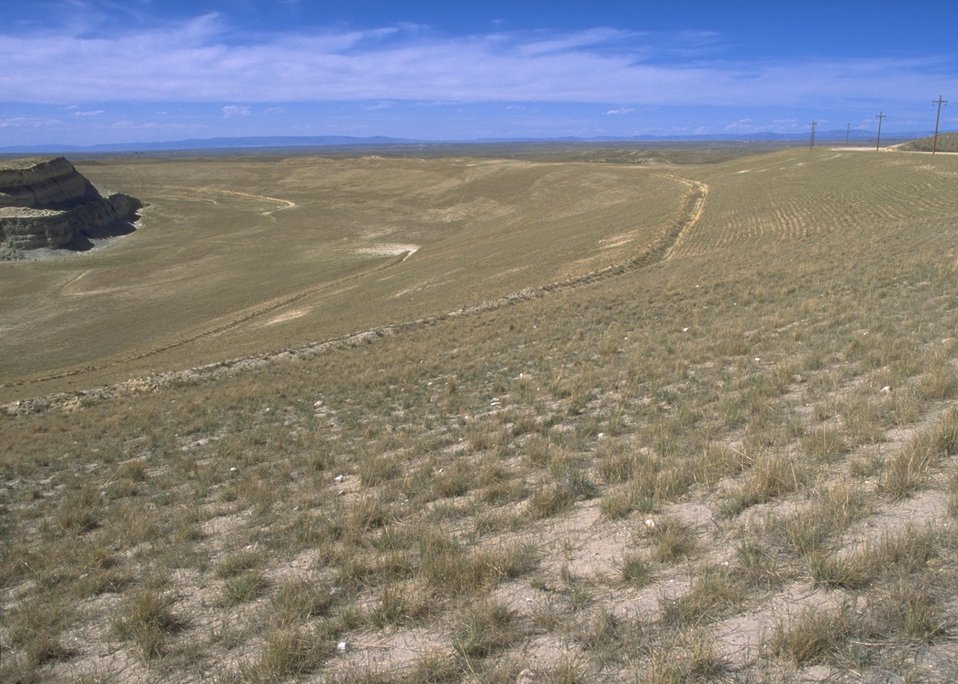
Gas Hill Abandoned Mine Lands in various stages of rehabilitation, Lander Field Office.